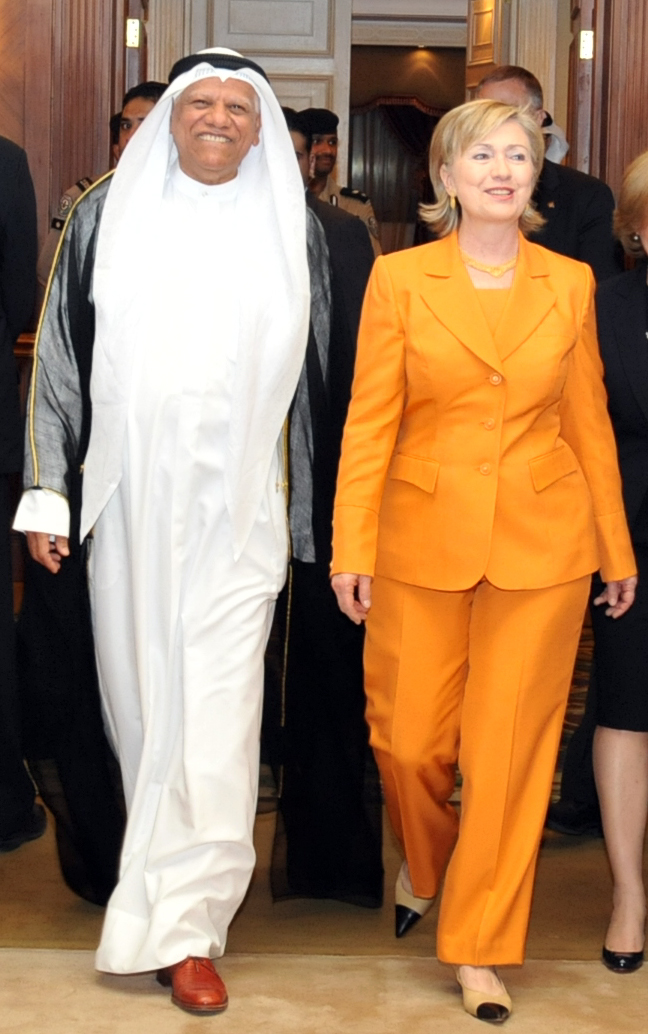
Secretary Clinton Arrives in Kuwait

U.S. Secretary of State Hillary Rodham Clinton arrives in Kuwait to a welcome from Kuwaiti Minister of Foreign Affairs Ambassador Ali Al-Sammak (left) in Kuwait City, Kuwait April 24, 2009.